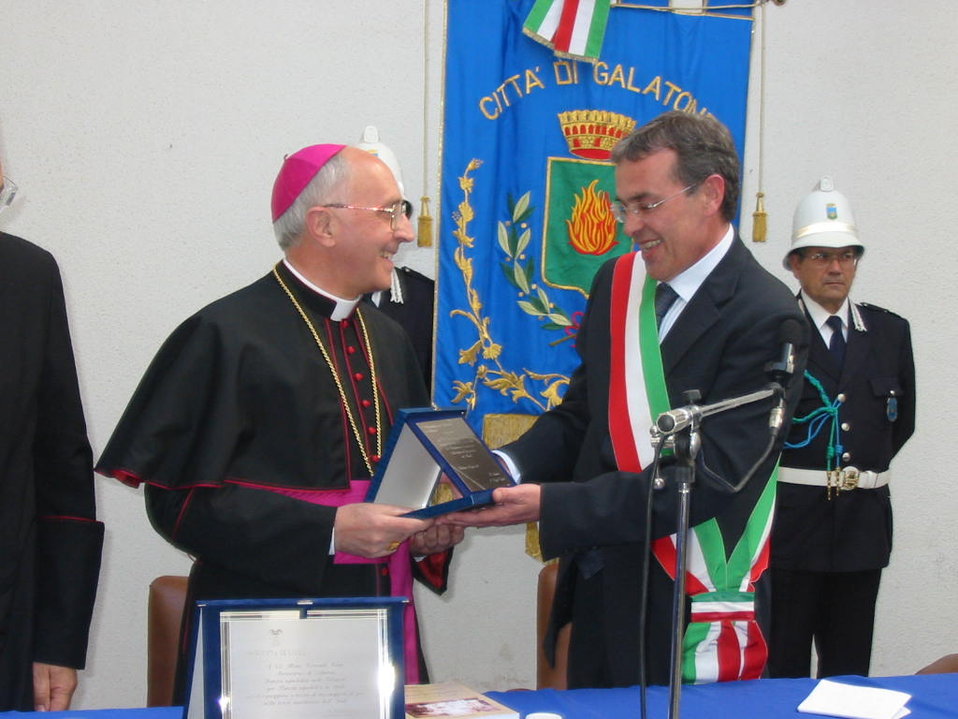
Italiano: Consegna della Cittadinanza onoraria del comune di Galatone a Mons. Fernando Filoni